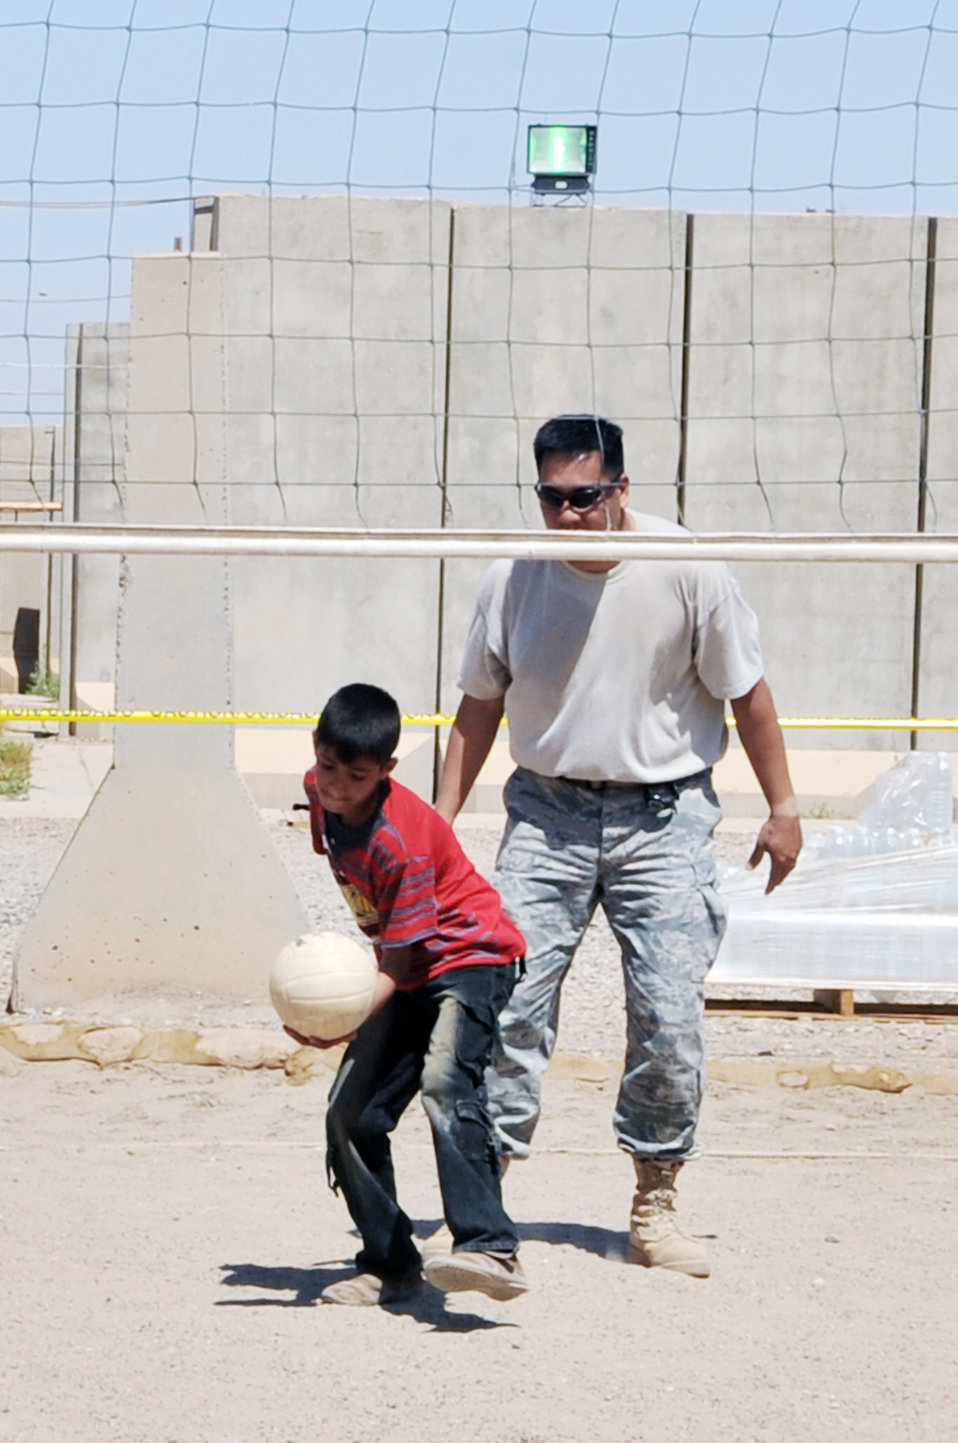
Balad servicemembers strengthen bonds with community, Iraqi children

Tech. Sgt. Joseph Ferrer plays volleyball with an Iraqi boy during Iraqi Kids Day at Joint Base Balad, Iraq, April 24, 2010. Sergeant Ferrer is a 332nd Expeditionary Civil Engineer Squadron construction manager.